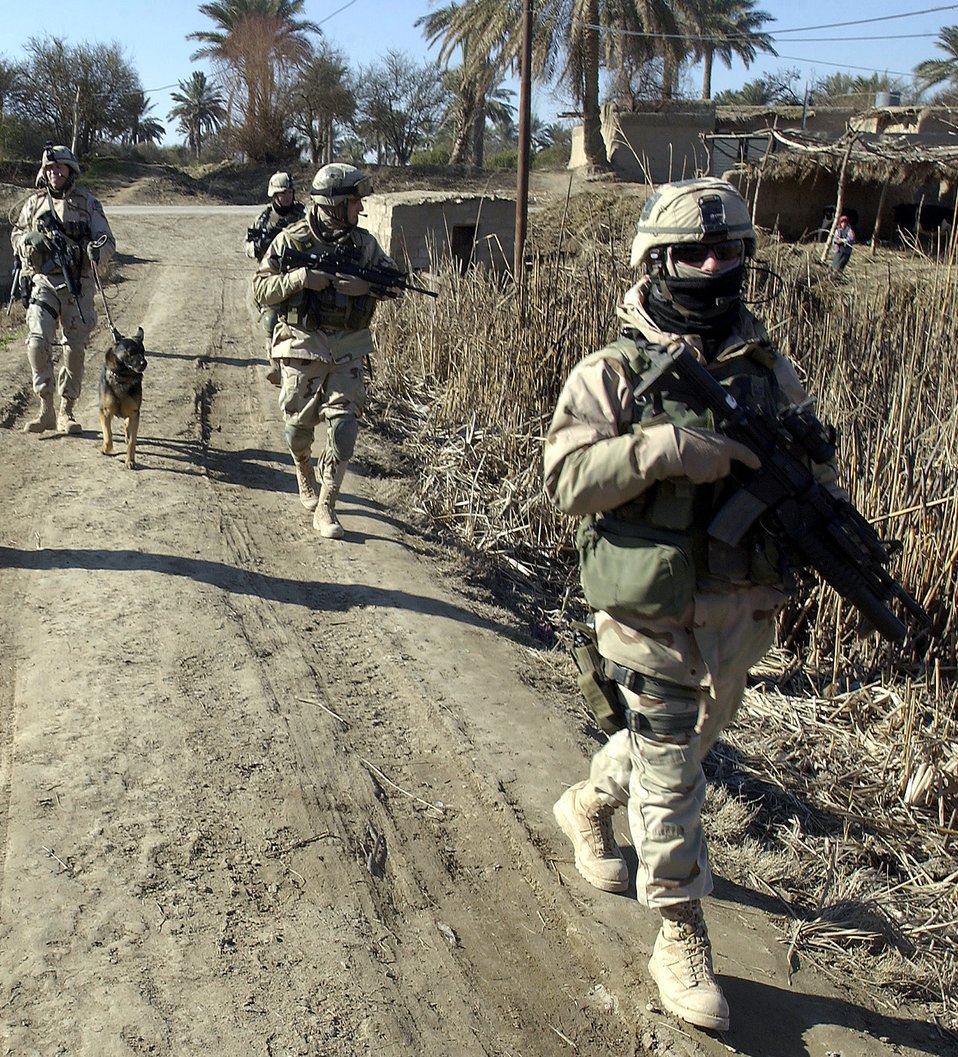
Airmen track terrorists offbase

NEAR BALAD AIR BASE, Iraq -- Airmen of Task Force 1041 patrol the local area. The task force is a self-sustaining unit and has medical staff, personnelists, information managers and other specialists who are all trained to be defenders.